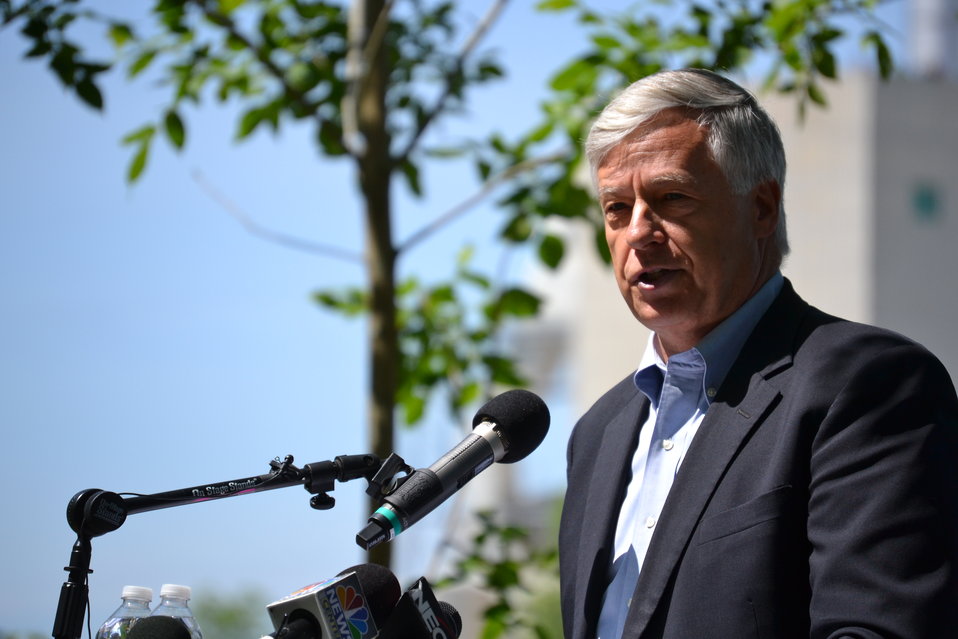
U.S. Congressman Mike Michaud